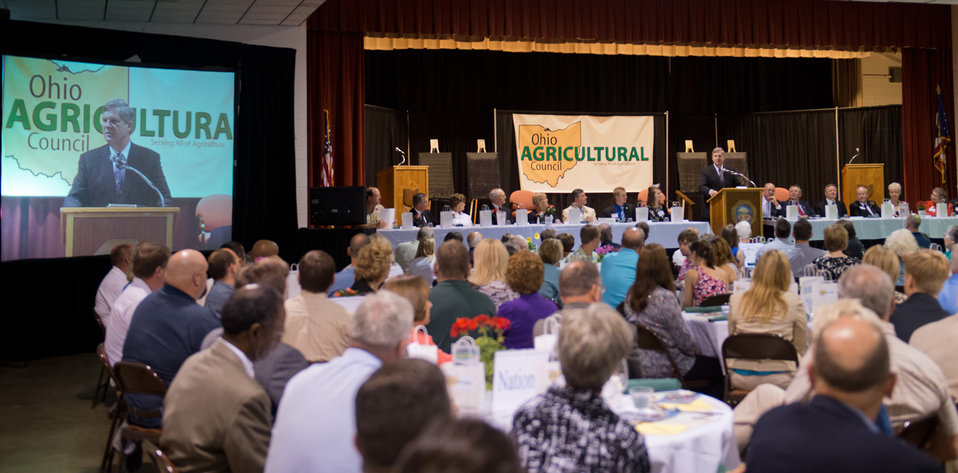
Agriculture Secretary Tom Vilsack speaks at the Ohio Agricultural Council Hall of Fame Breakfast in Columbus, OH on Friday, August 3, 2012. Secretary Vilsack was the keynote speaker and spoke about how important Agriculture is to the nation. The Secretary stated he is proud of The Ohio State University and its research and the need to involve American youth in the industry as tomorrow's leaders.